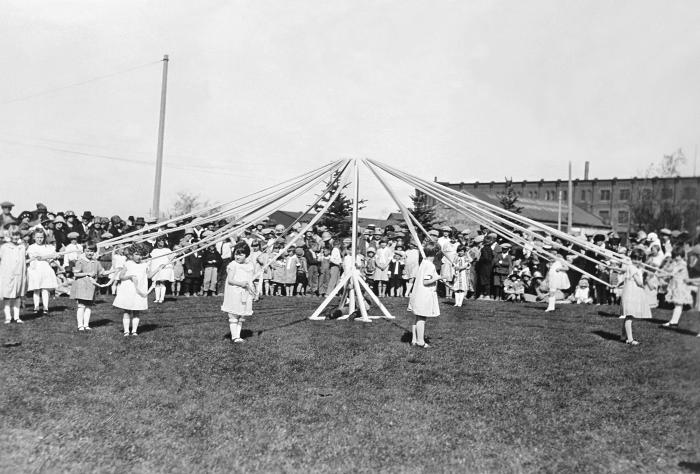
This historic photograph depicted children parading around a maypole in observance of 'Child Health Day' in the state of Montana. The original image was scanned from a glass lantern slide donated by the Minnesota Department of Health, and is one of a historical collection of documents and photographs devoted to observances of Child Health Day in the United States.